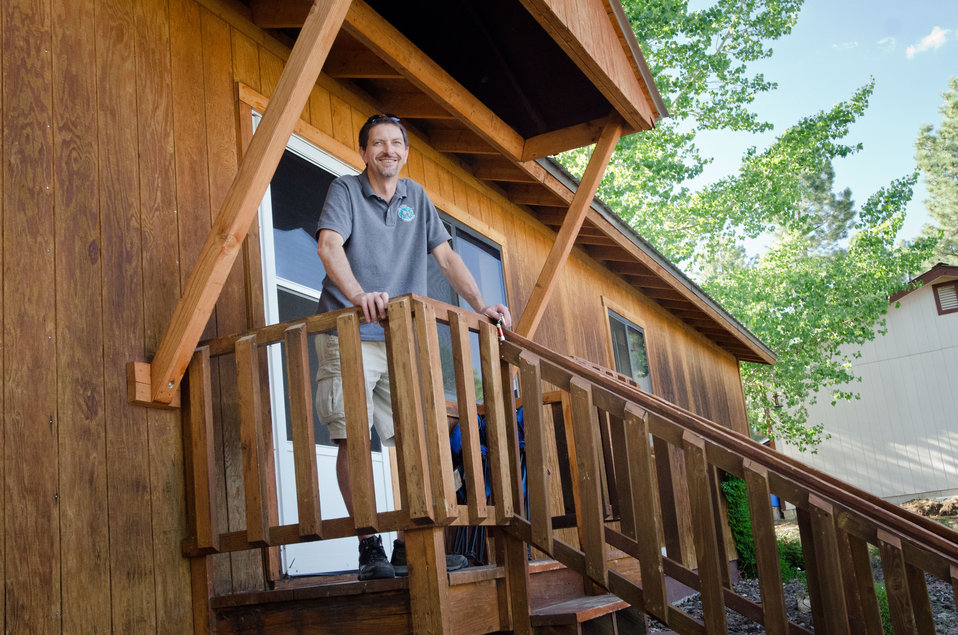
Colorado native and local business owner Bruce Longwell at his Durango, CO home on July 17, 2012. Mr. Longwell financed the single-family house with a U.S. Department of Agriculture (USDA) Rural Development (RD) Housing Assistance loan. This provided lower monthly payments than his prior rental home. Homeownership provides potential gains through home equity.